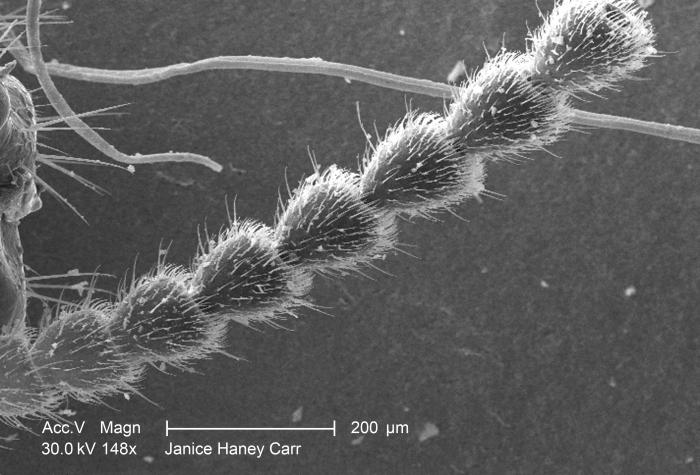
Under a relatively low magnification of 148X, this scanning electron micrograph (SEM) revealed some of the ultrastructural morphology found on the surface of an antenna situated on the head region of a termite found in Atlanta, Georgia. Look at PHIL 11270 through 11273, for additional views of this structure under successively higher magnifications.